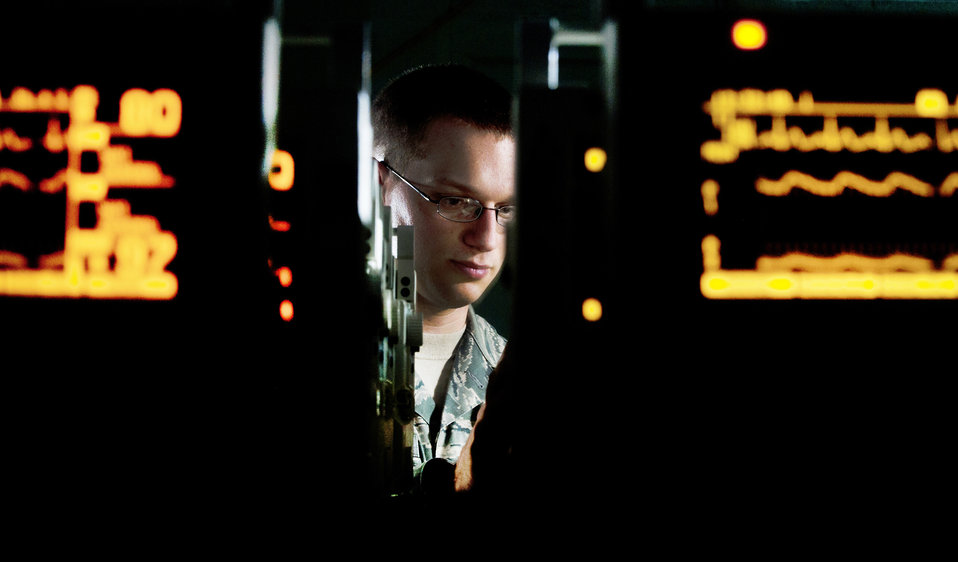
Medical

Staff Sgt. Caleb Gibson checks Propaq Encore monitors at Joint Base Andrews, Md., Aug. 15, 2012. Caleb is a biomedical equipment technician assigned to the Medical Logistics Flight of the 779th Medical Support Squadron.